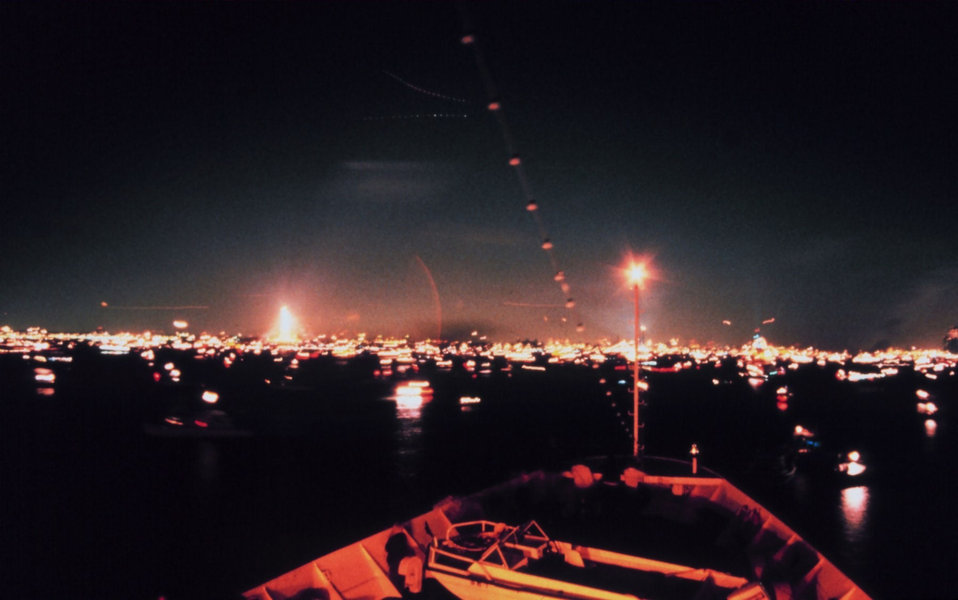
Fireworks over New York during Bicentennial celebration